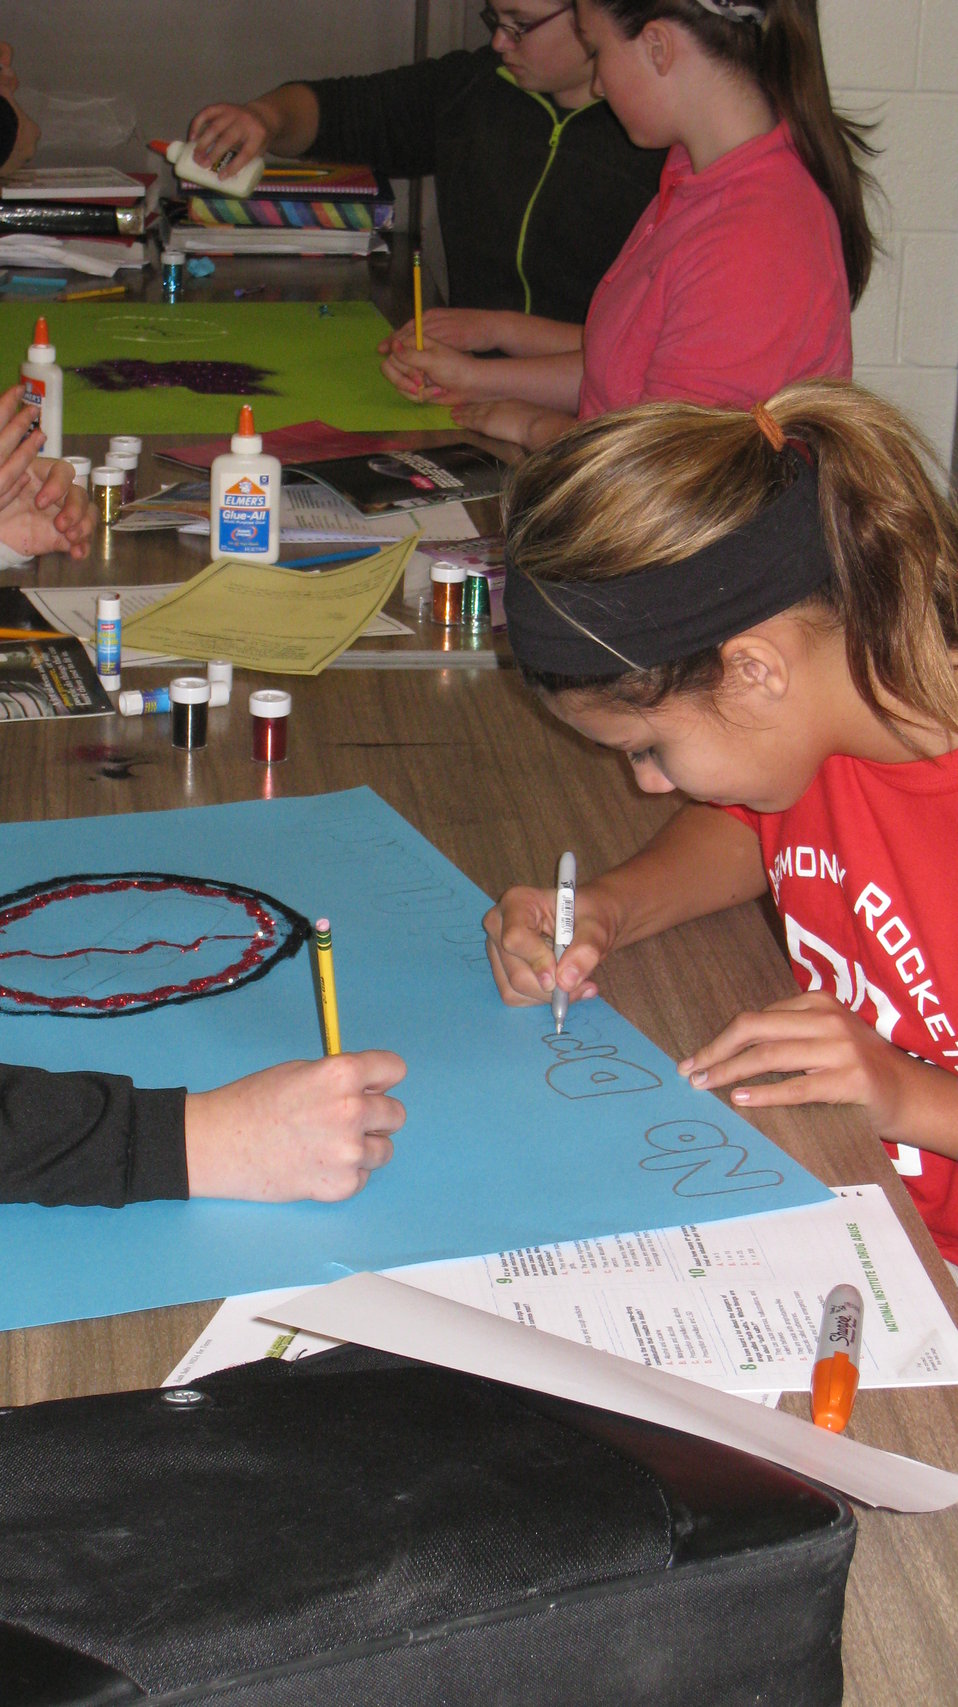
Youth Leadership Council: 2014 NDFW

Teenagers from the Van Buren County SAFE Coalition's, Youth Leadership Council (YLC) in Keosauqua, Iowa participate in various events during National Drug Facts Week, 2014.